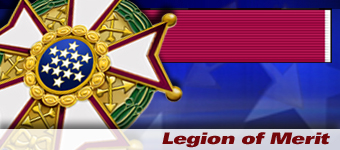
Legion of Merit heritage spotlight graphic